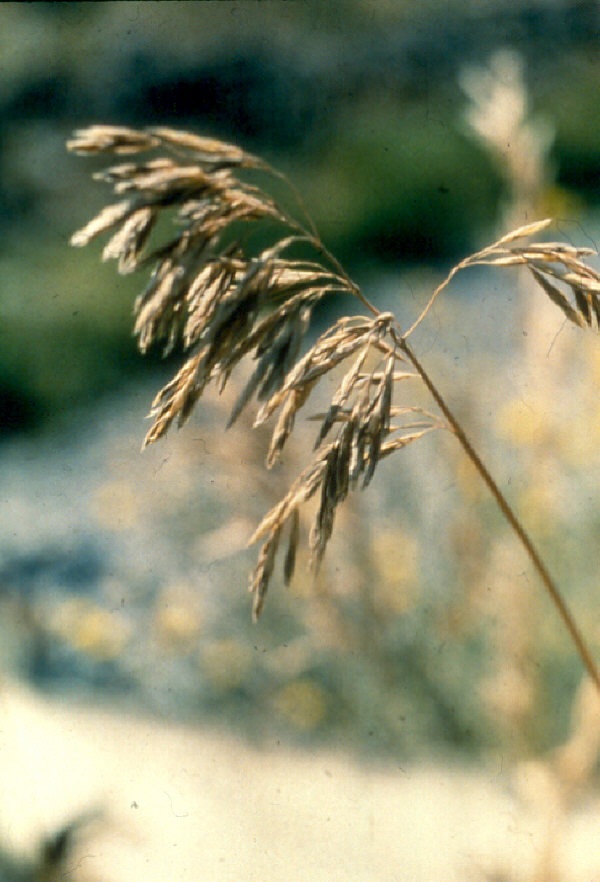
Salmon FIeld Office UCSC Upper Columbia Salmon Clearwater District